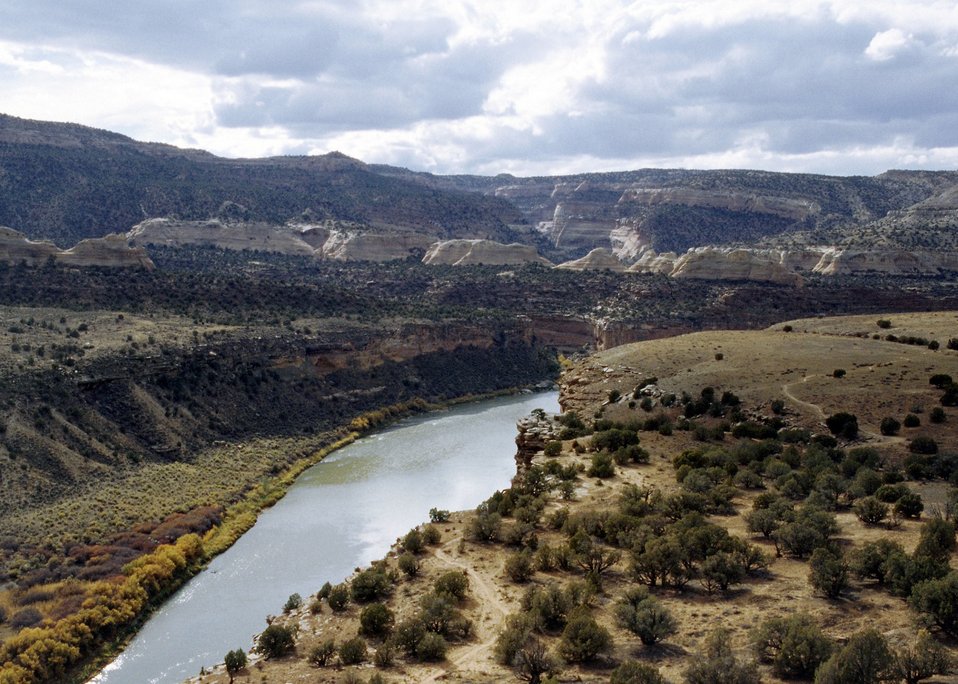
Colorado River wide view